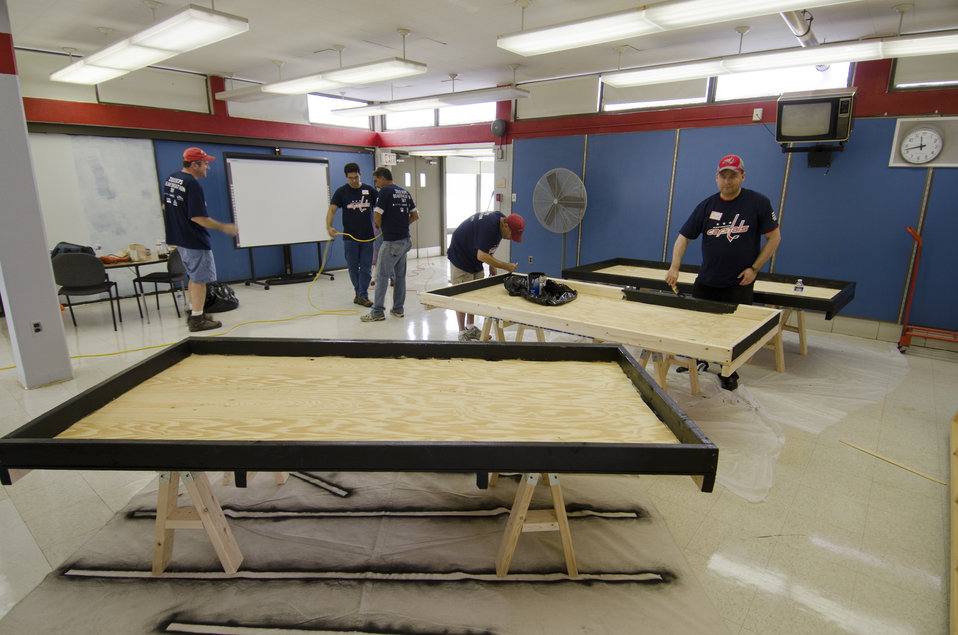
U.S. Department of Agriculture (USDA) People’s Garden Executive Master Gardeners, friends, and family, along with Washington Capitals fans are volunteering in District of Columbia Public Schools’ (DCPS) Beautification Day, on Saturday, August 25, 2012, at Thurgood Marshall Elementary School, in Washington, D.C. Each year people are invited to help “spruce up” public school facilities in preparation for the first day of school. More than 70 volunteers pitched in at this large school facility. The People’s Garden effort involves building and painting raised planter boxes, then preparing the soil mixture so they are “ready to grow.” Additionally, a team that includes descendants of U.S. Supreme Court Justice Thurgood Marshall assembles a prefabricated garden toolshed. The Justice’s son, John Marshall leads the team, which includes Brianna the Justice’s great-grand daughter in one of many multi-generational efforts at this school today. Washington Capitals Forward Mike Riberio, his family and mascot Slapshot participated in every project underway at Marshall School. From the outside gardens, to inside mural painting, and robotics worktable construction, the teams made their goals.